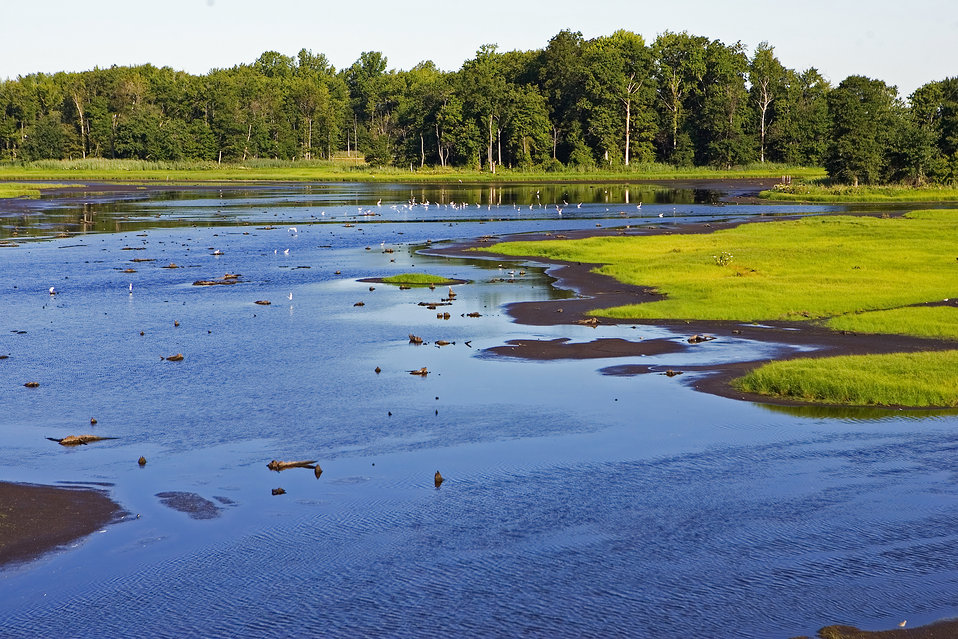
Impoundment

Bombay Hook National Wildlife Refuge, DE.